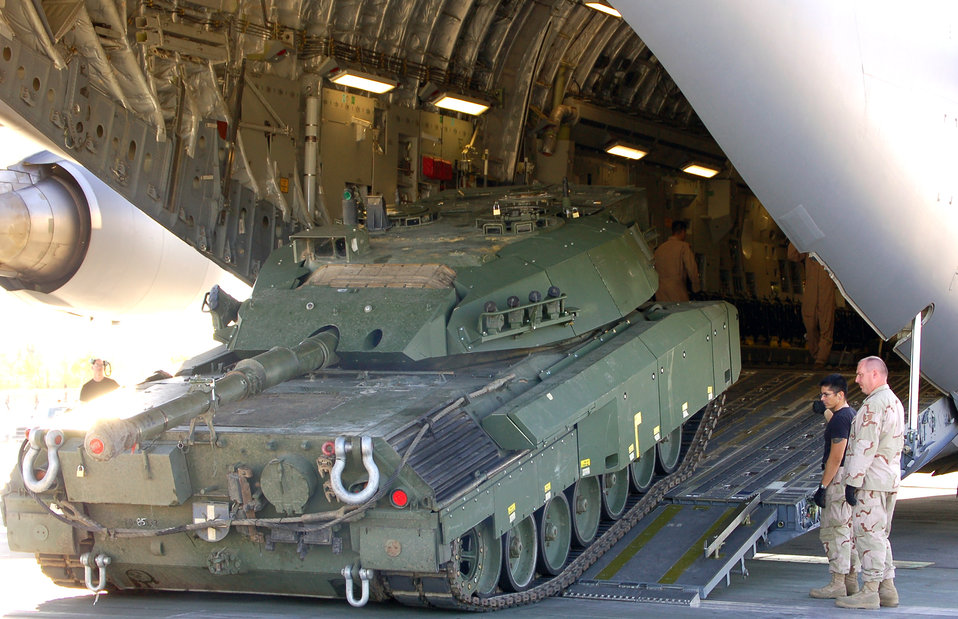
'Spirit of McChord' gives Canadians lift

A Canadian Leopard tank is driven onto the C-17 Globemaster III named the